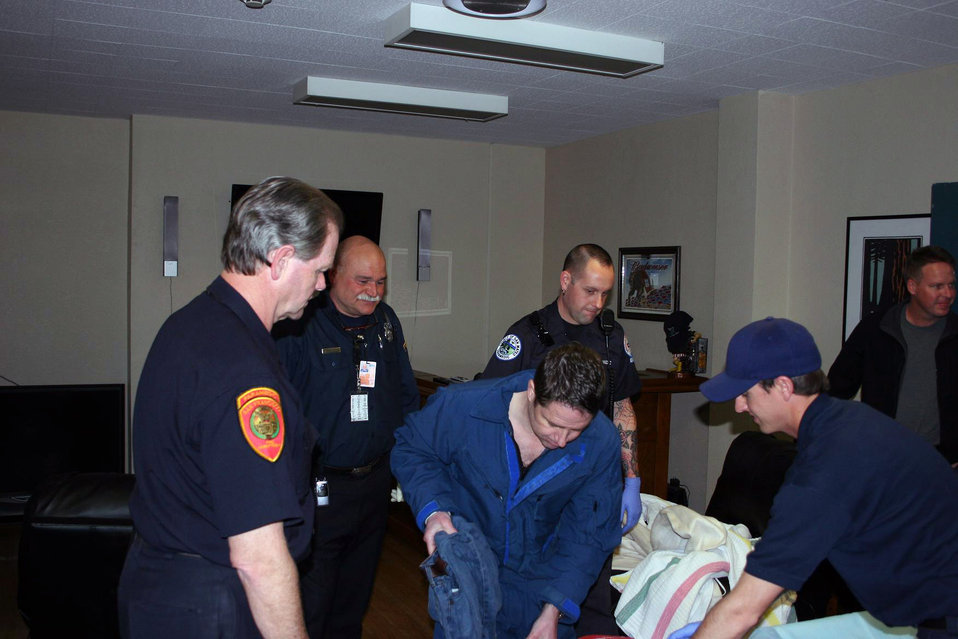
Helicopter crew rescues downed pilot

U.S. Coast Guard Air Station San Francisco personnel, emergency medical technicians and policemen from the San Francisco Police Department help the survivor of a plane crash into a survival suit Jan. 29. The survival suit was used to help raise his body temperature after the onset of hypothermia. The pilot lost power to his single-engine plane about 10 miles west of Pillar Point. He was rescued by a California Air National Guard HH-60G Pave Hawk helicopter crew from the 129th Rescue Wing at Moffett Federal Airfield, Calif.